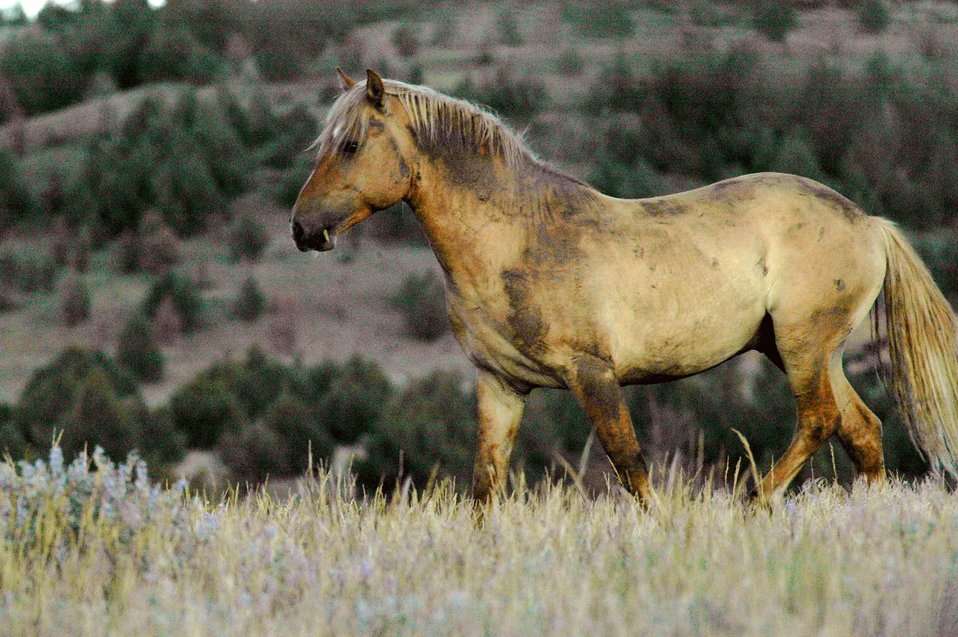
Kiger horses roam the plateaus of the Kiger Wildhorse Herd Management Area near Steens Mountain in Southeastern Oregon.